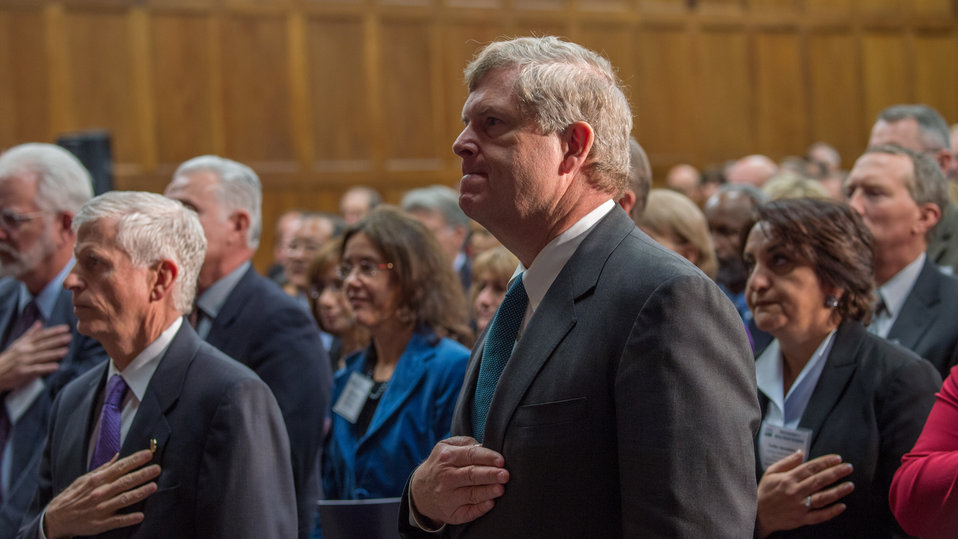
Agriculture Secretary Tom Vilsack salutes the flag at the 65th Annual Secretary's Honor Awards at the 2013 Secretary's Honor Awards ceremony held in the Jefferson Auditorium at the U.S. Department of Agriculture (USDA) in Washington, D.C. on Wednesday, Dec. 11, 2013.